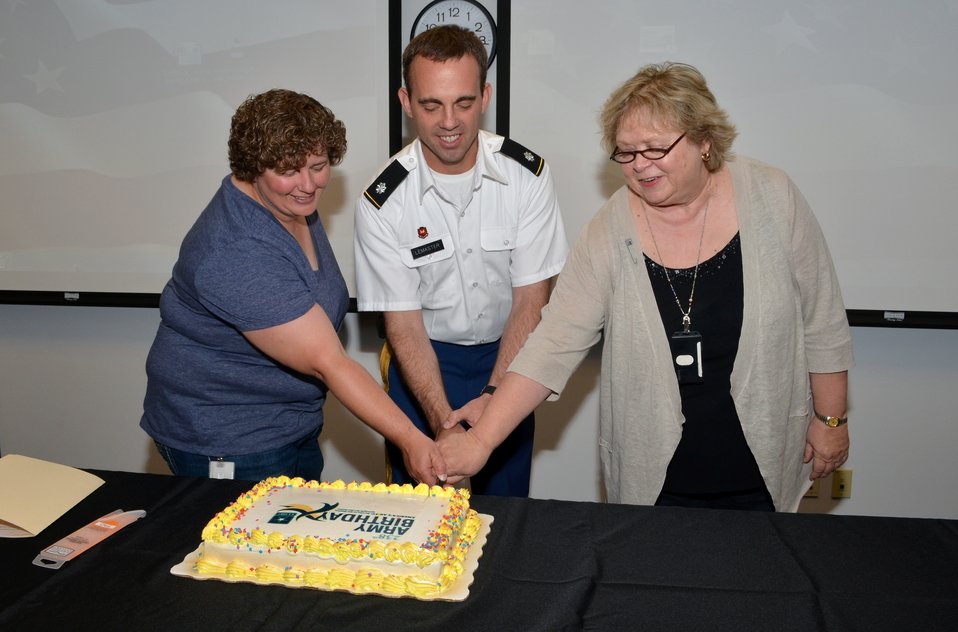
Sacramento District celebrates 238th Army Birthday

Lt. Col. Braden LeMaster (center), U.S. Army Corps of Engineers Sacramento District deputy commander, Heather Downing (left), cartographer in the real estate division, and Sharon Caine, real estate division chief, cut an Army birthday cake to celebrate the U.S. Army's 238th birthday in Sacramento, Calif., June 14, 2013. Downing and Caine, respectively, were the district’s newest and longest-serving employees in attendance during the celebration, held at the district's headquarters in Sacramento.